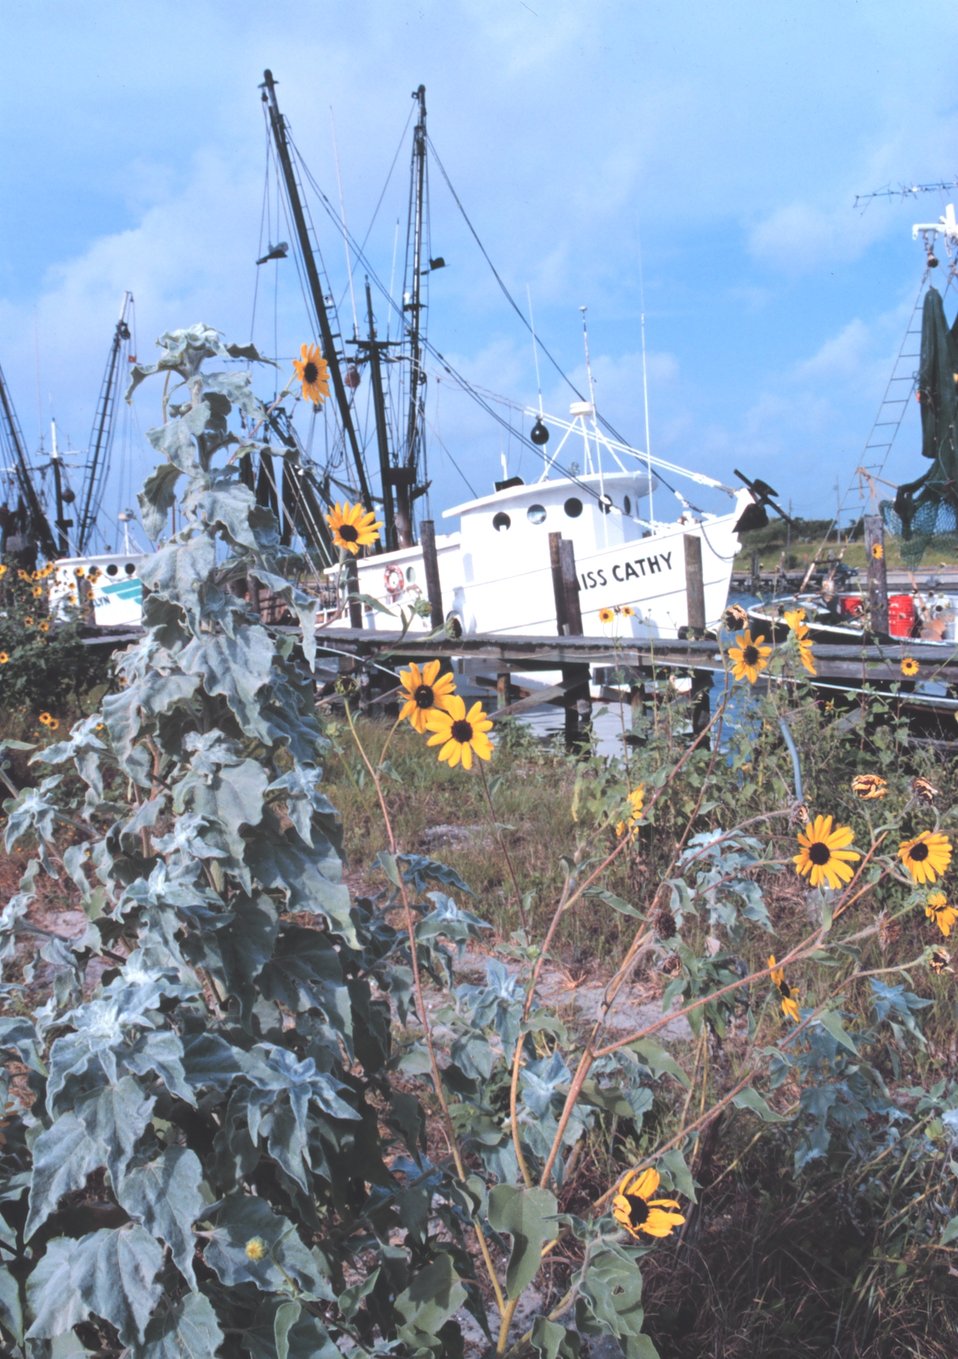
Shrimp boats and sunflowers at Conn Brown Harbor